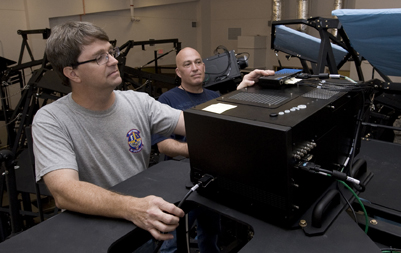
F-16 flight simulator

Brian Miller, an L3 Communications assistant site supervisor, and Brian Smith, the lead technician, review the functions of a projector from the F-16 Fighting Falcon Mission Training Center flight simulator June 13, 2011, during the installation phase at Nellis Air Force Base, Nev. The simulator will allow F-16 pilots to practice aerial maneuvers, formations, and air-to-air combat with a 360-degree view. This simulator is one of four to be constructed at Nellis AFB.